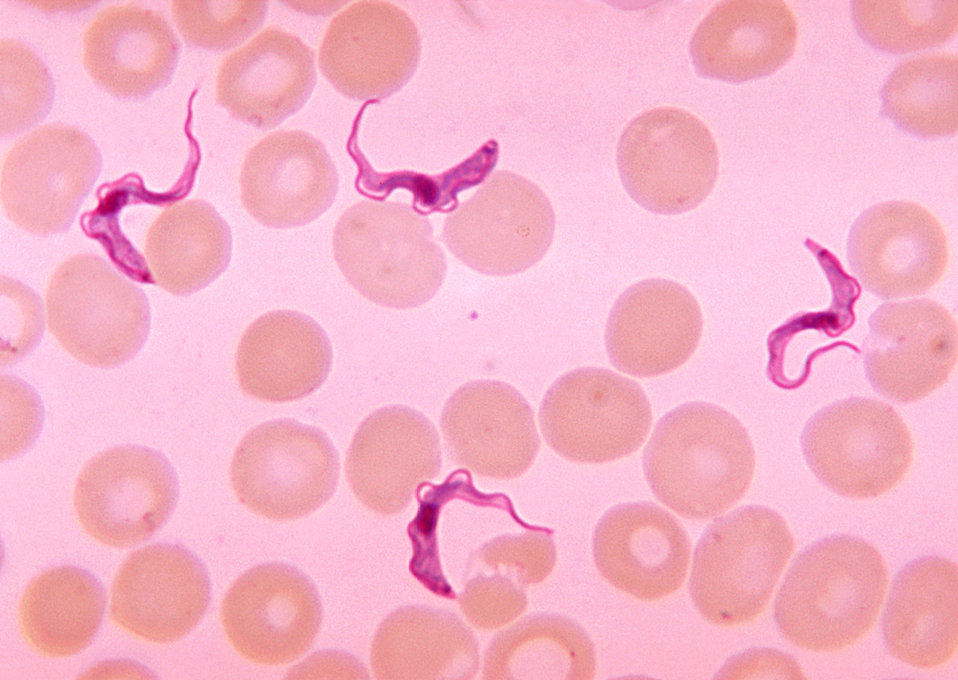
Trypanosoma forms in blood smear from patient with African trypanosomiasis. Parasite.